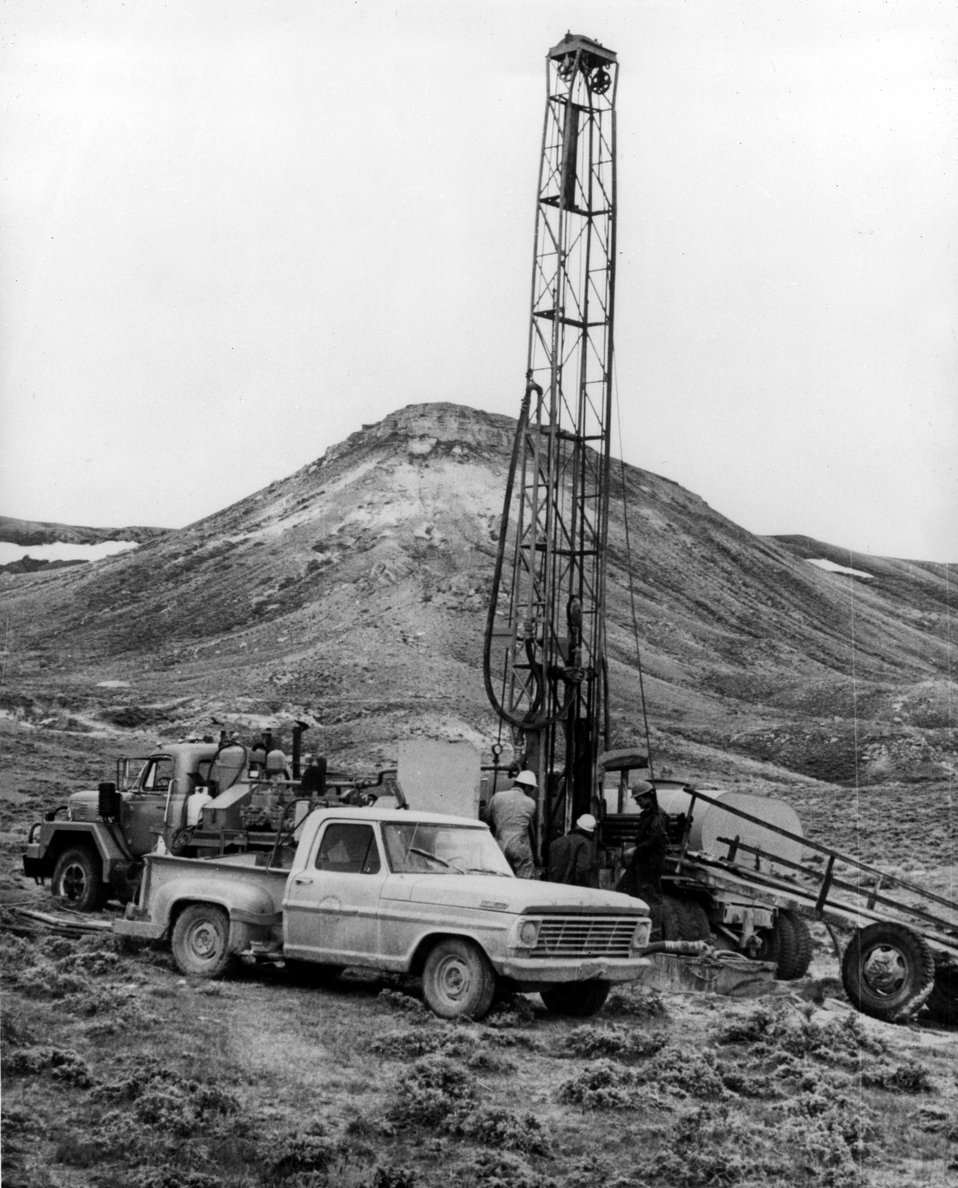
After a uranium claim has been properly located, and the location certificate filled, the owner usually contracts to have the area explored by using a diamond-drilling rig, such as shown here. c. 1955